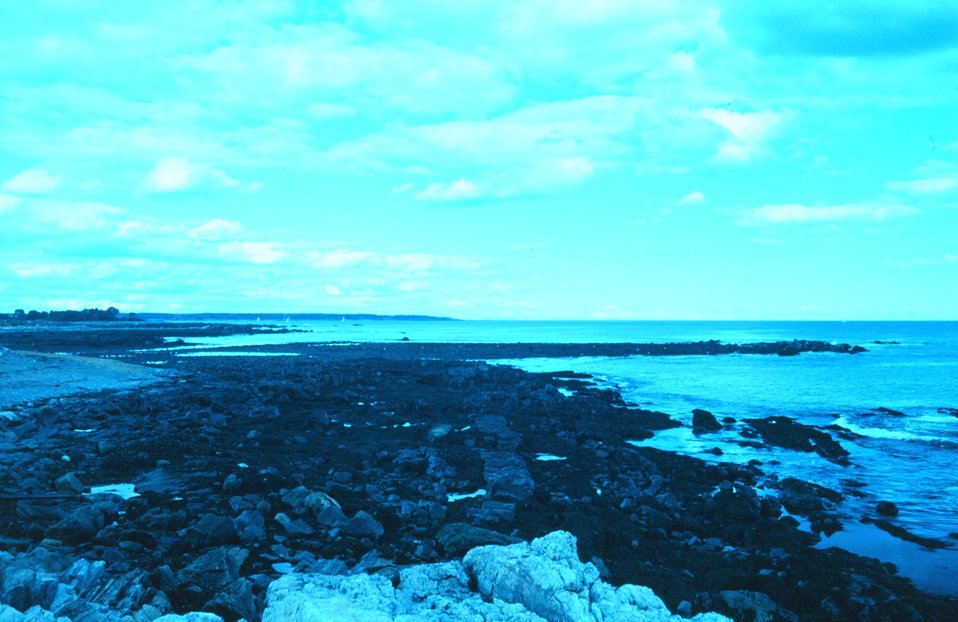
Rocky New Hampshire coastline.